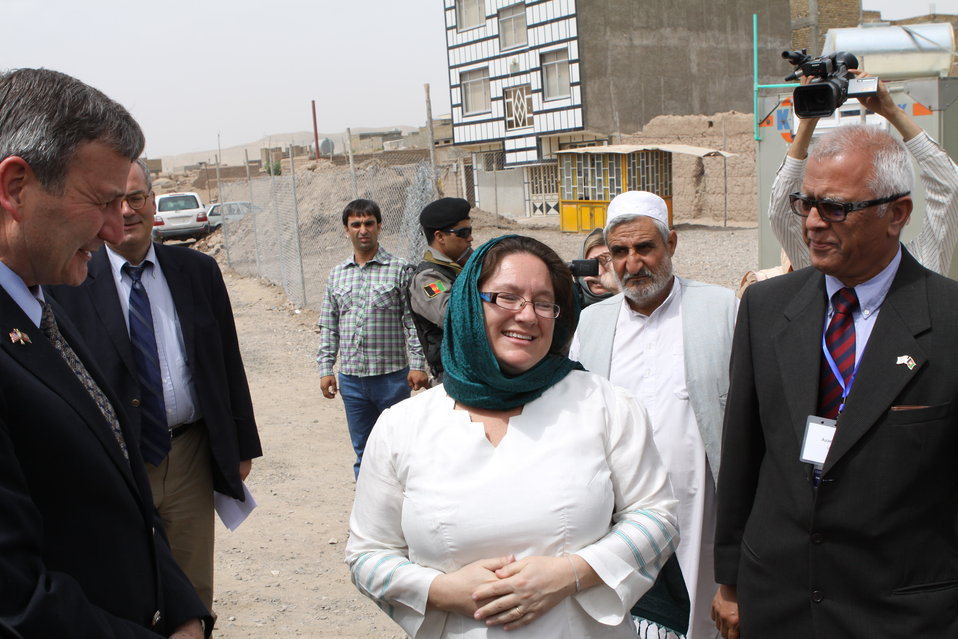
100525 Hirat Marble Conference 600